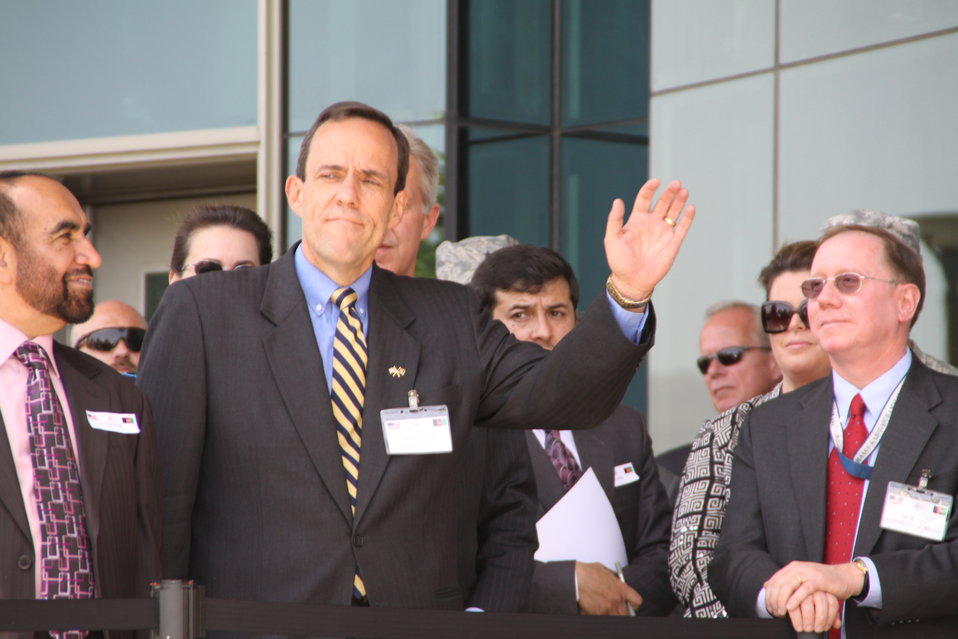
Kabul Official July 4th Celebration